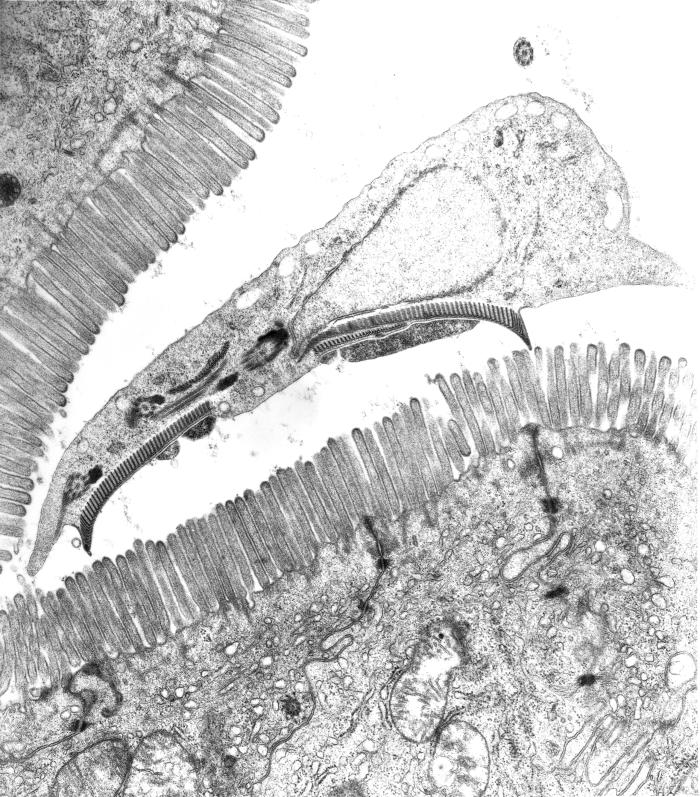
This is a transmission electron micrograph (TEM) of a thin section cut through the ventral adhesive disk (suction-cup-like structure) of a Giardia sp. protozoan, which had adhered itself to the mucosal 'comb-like' microvillous border of an intestinal epithelial cell from a rat ileum. Note the monolayer of microtubules in the organism's ventral adhesive disk.